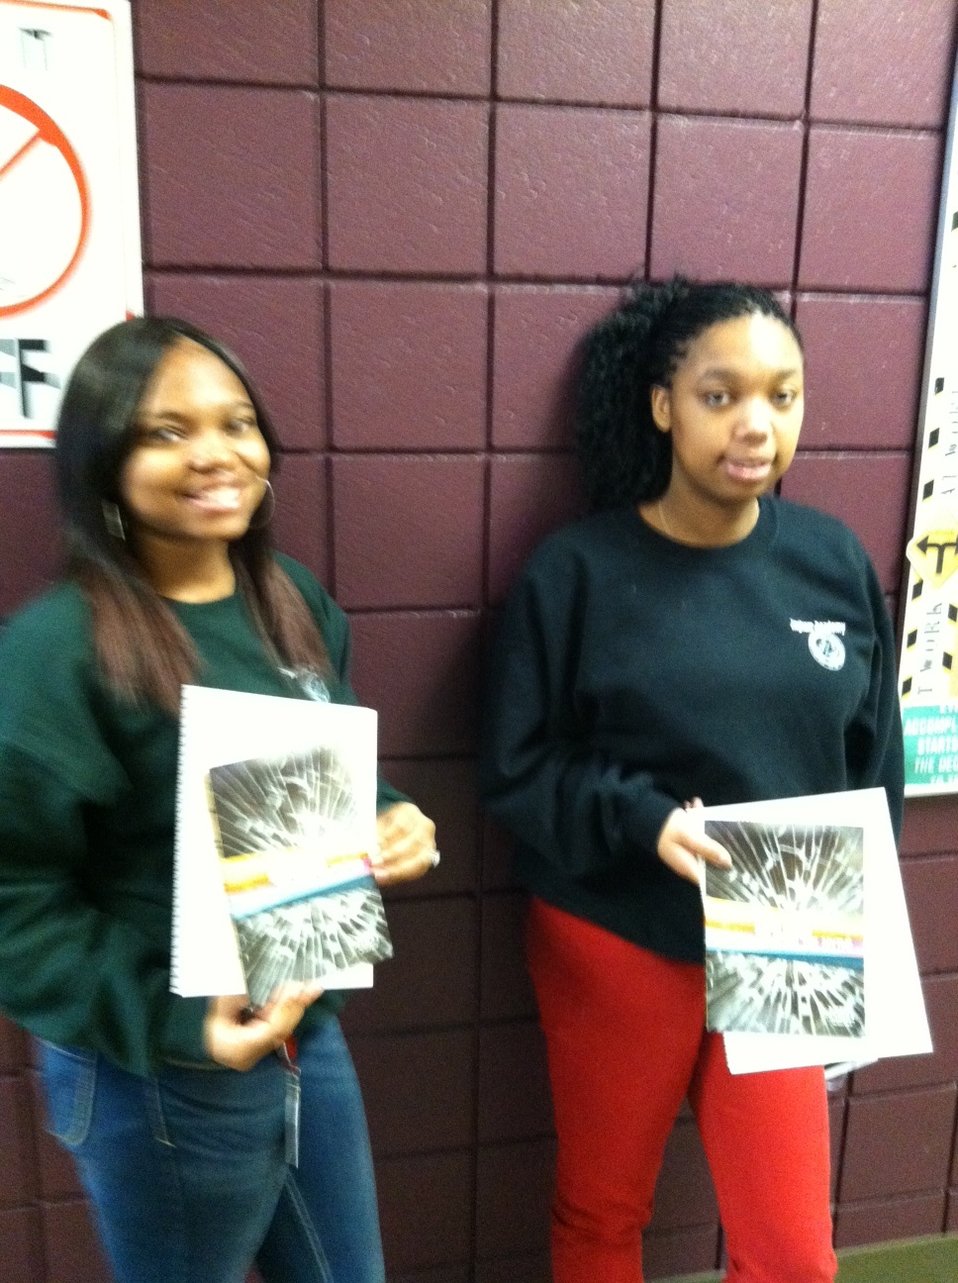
Michigan Kids hold NDFW 2013

Lansing, Mich., Peckham Youth Program 'Shatters the Myth' during the National Drug Facts Week Event.